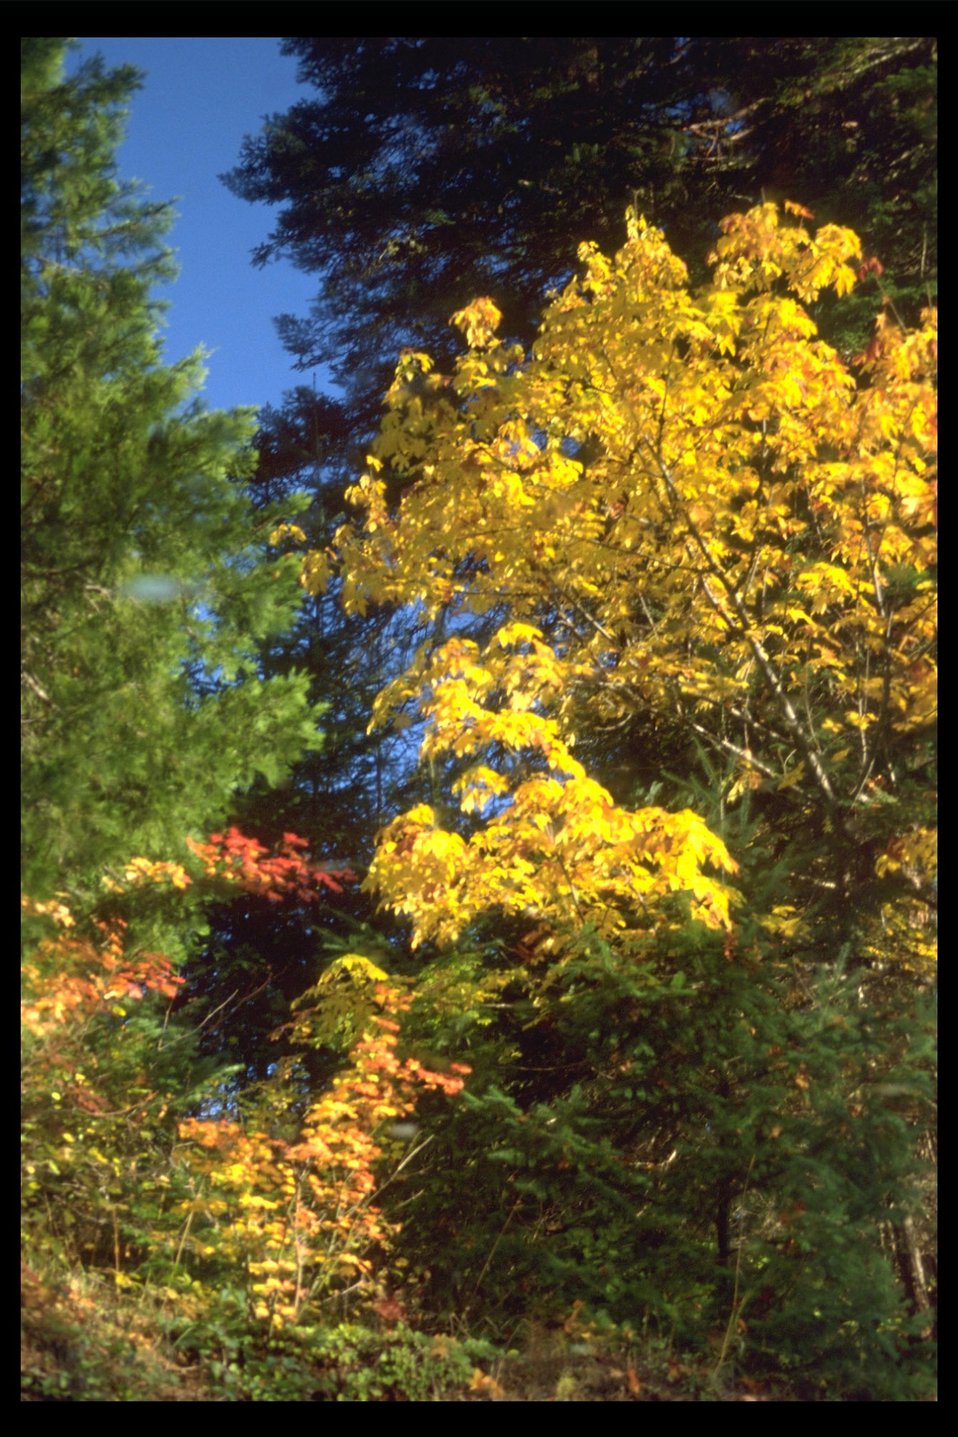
Fall colors.